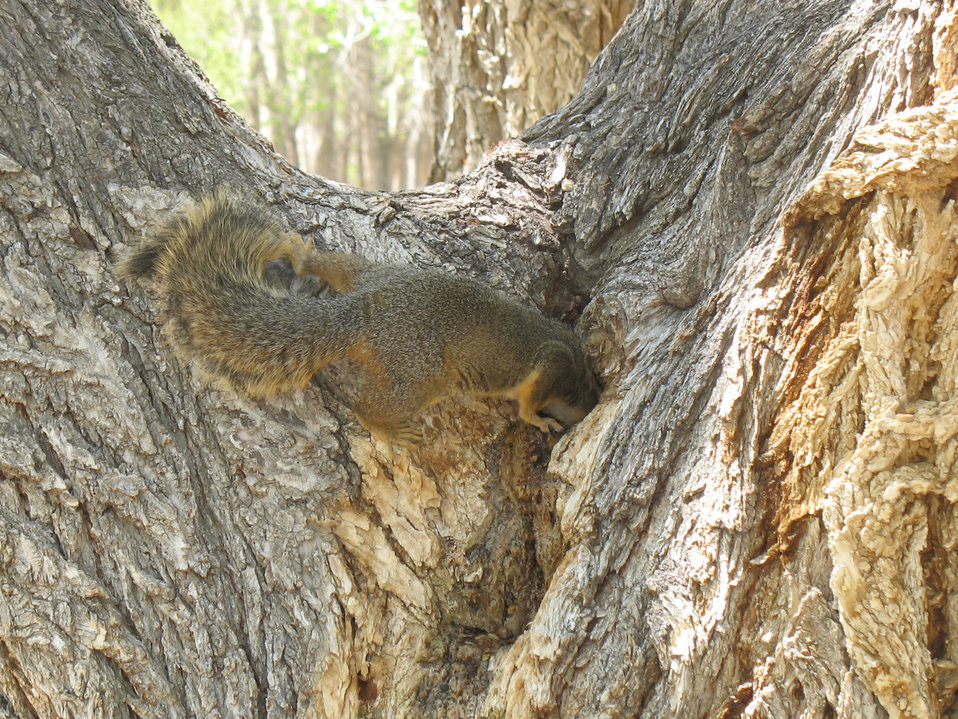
Fox squirrel, Crow Valley Campground, Briggsdale, CO.

Credit: Pedro 'Pete' Ramirez, Jr. / USFWS